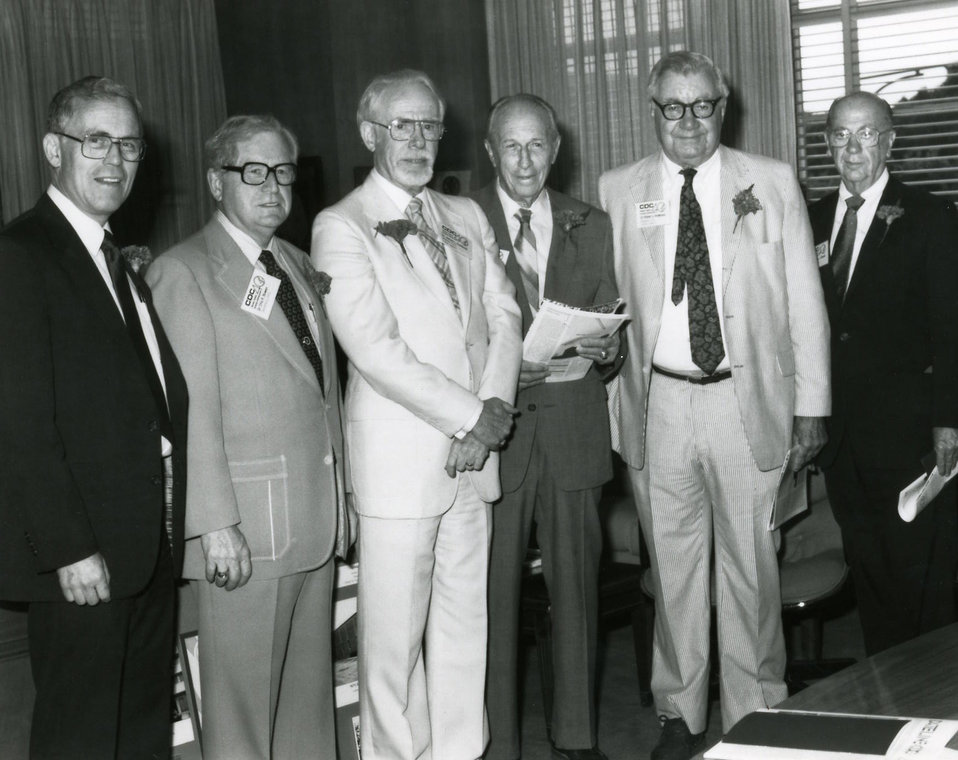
This 1986 photograph showed some of the former Centers for Disease Control Directors who'd come to the Roybal Campus in Atlanta, Georgia, in order to celebrate CDC's 40th anniversary.